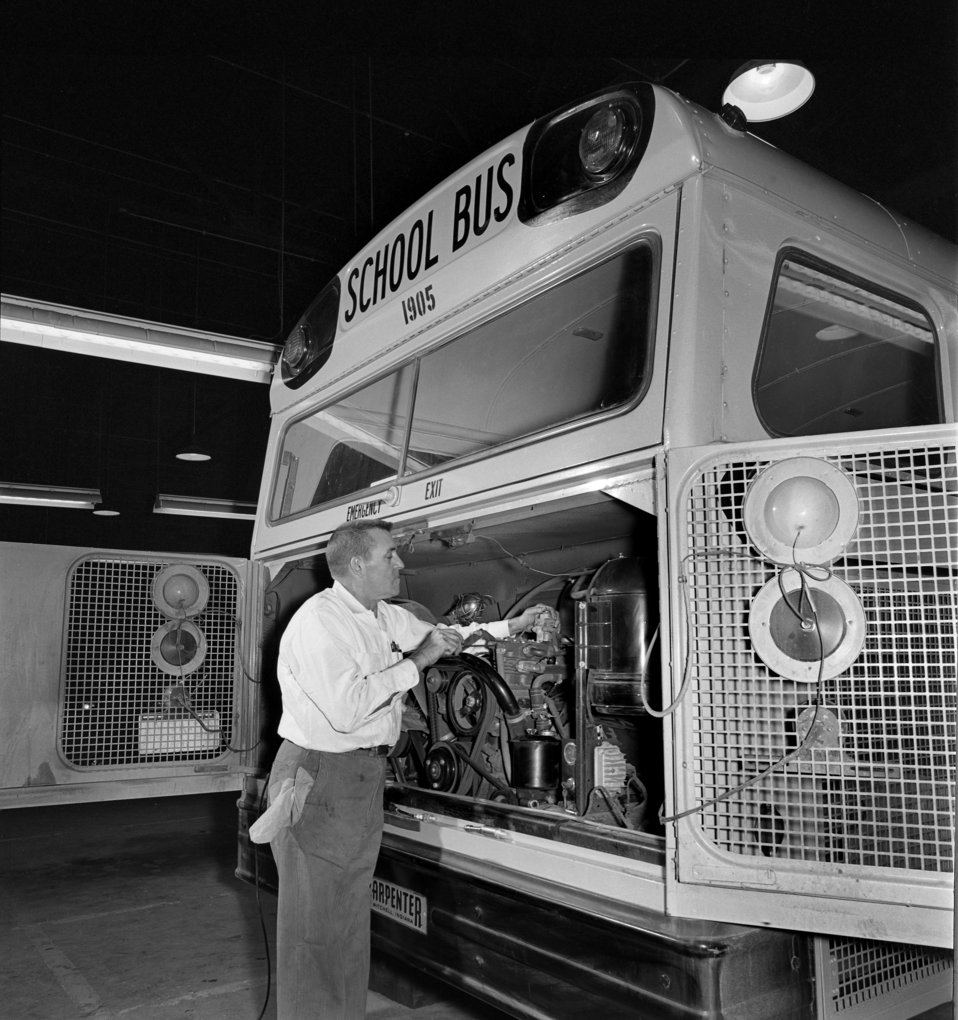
Working on Oak Ridge School Bus 1968

68-580a DOE photo Frank Hoffman 11-25-1968 Oak Ridge Tennessee